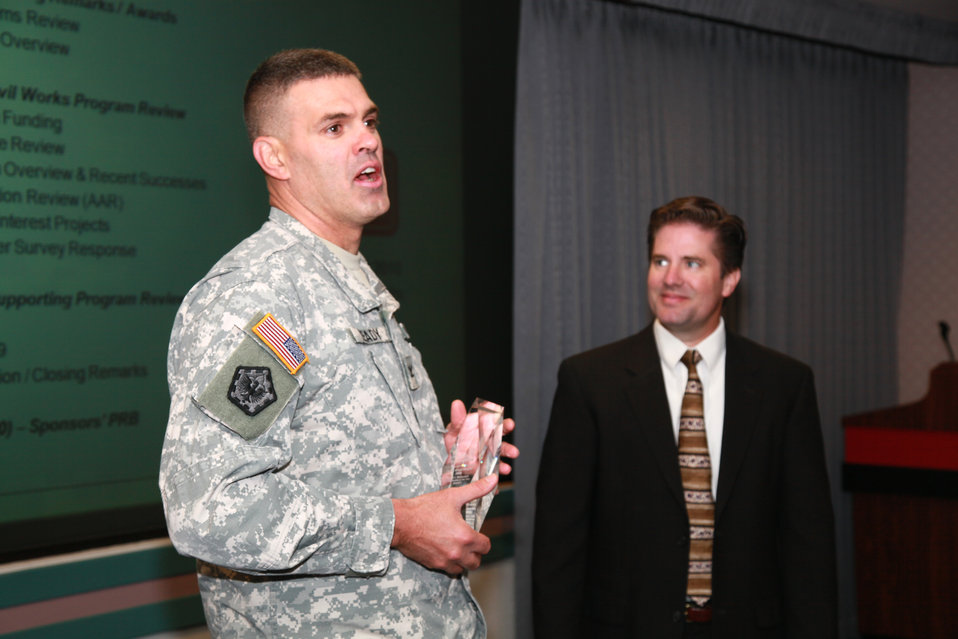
SACRAMENTO,Calif. (Aug.10,2010)--Commander of the Sacramento District COL Bill Leady presents the pestigious Communicator of the Year Award to Creg Hucks.